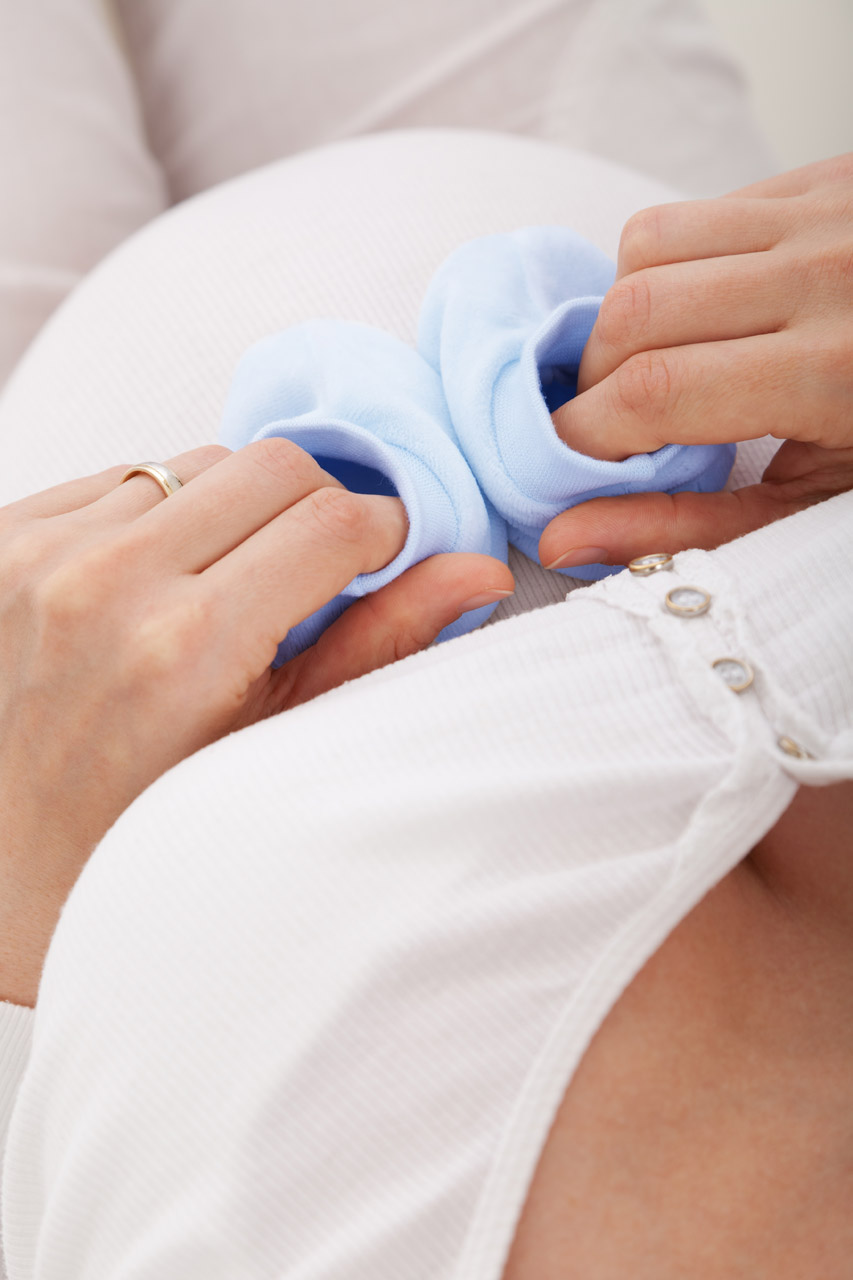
Expecting baby boy

Mom to be holding blue shoes on her belly.